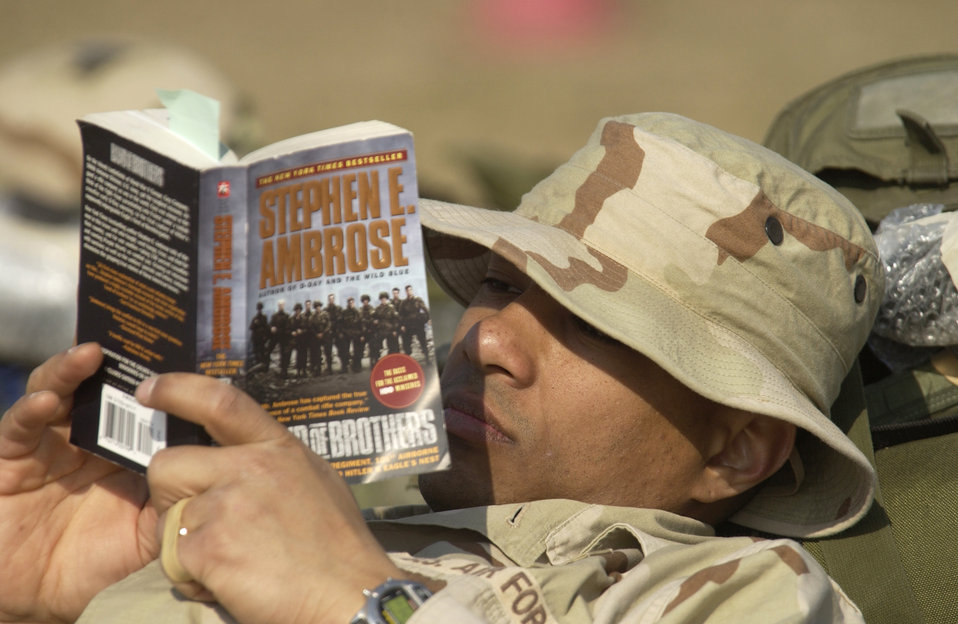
A good book

OPERAITON IRAQI FREEDOM -- A security forces member relaxes and reads a book while waiting to be moved forward from an air base in Europe in support of Operation Iraqi Freedom on March 26.